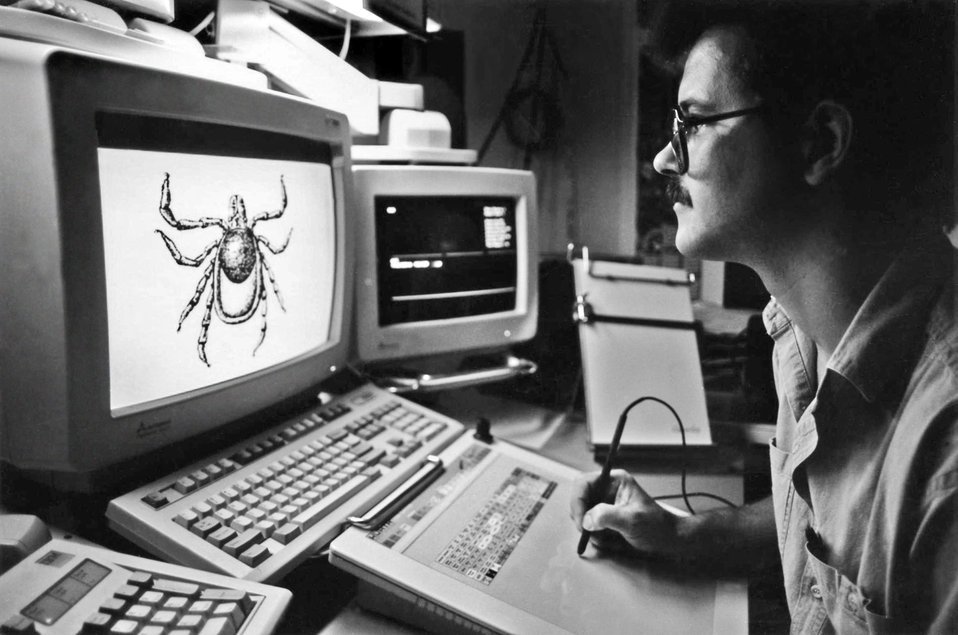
This photograph depicted Centers for Disease Control employee Pete Seidel working on a tick illustration for the National Center for Infectious Diseases (NCID). Currently, Mr. Seidel is occupying the position of Acting Branch Chief for the Division of Specialized Media, which is hierarchically situated in the organization's National Center for Health Marketing.